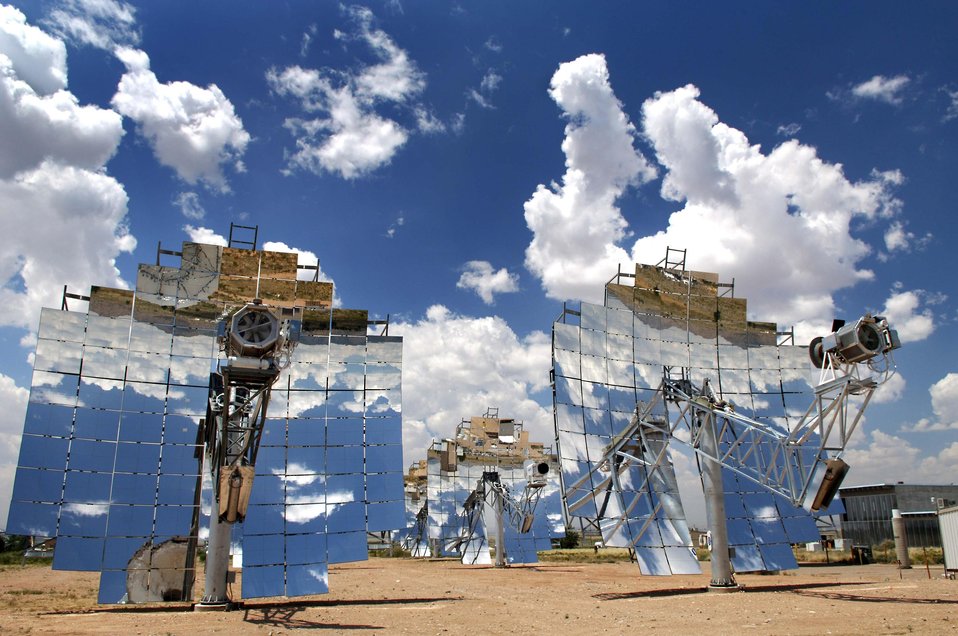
SANDIA'S DISH STIRLING TEST COMPLEX IS LOCATED AT THE NATIONAL SOLAR THERMAL TEST FACILITY (NSTTF).

THE NSTTF, IS THE LARGEST ARRANGEMENT OF SOLAR DISH STIRLING SYSTEMS IN THE WORLD. IT PROVIDES ENOUGH GRID-READY SOLAR ELECTRICITY FOR MORE THAN 40 HOMES.